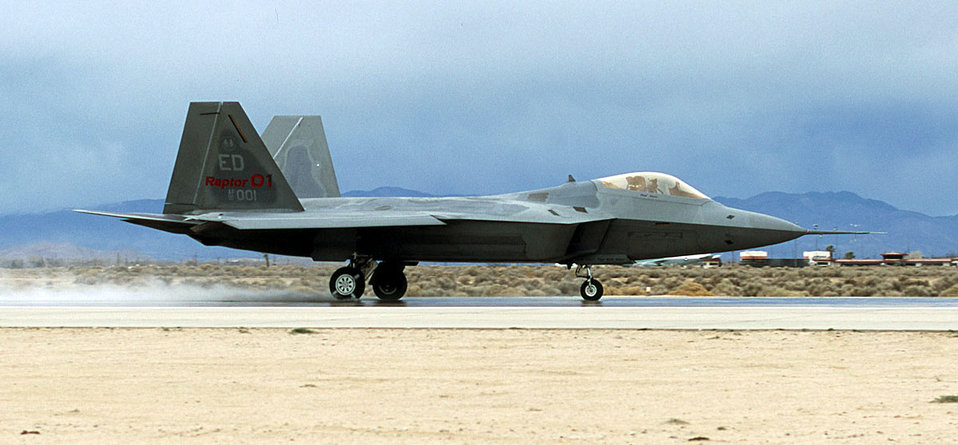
Raptor 4001

EDWARDS AIR FORCE BASE, Calif. (AFPN) -- On a rare rainy day in the Mojave Desert, the F/A-22 Combined Test Force puts Raptor 4001 through wet-runway testing at speeds of 30, 60 and 90 knots.